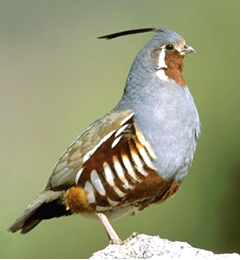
Mountain Quail - Oregon Fish and Wildlife Office